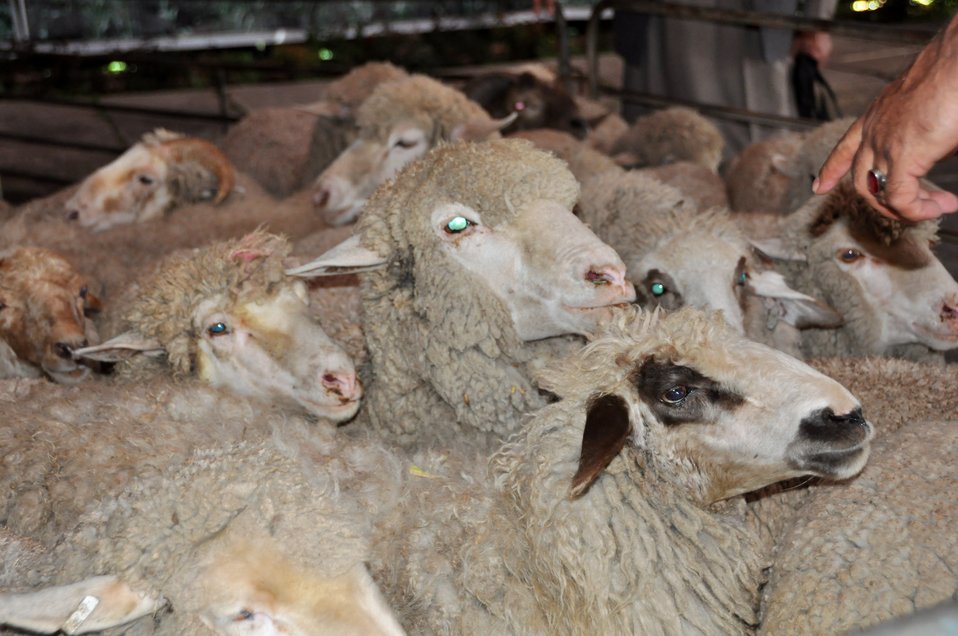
Sheeps